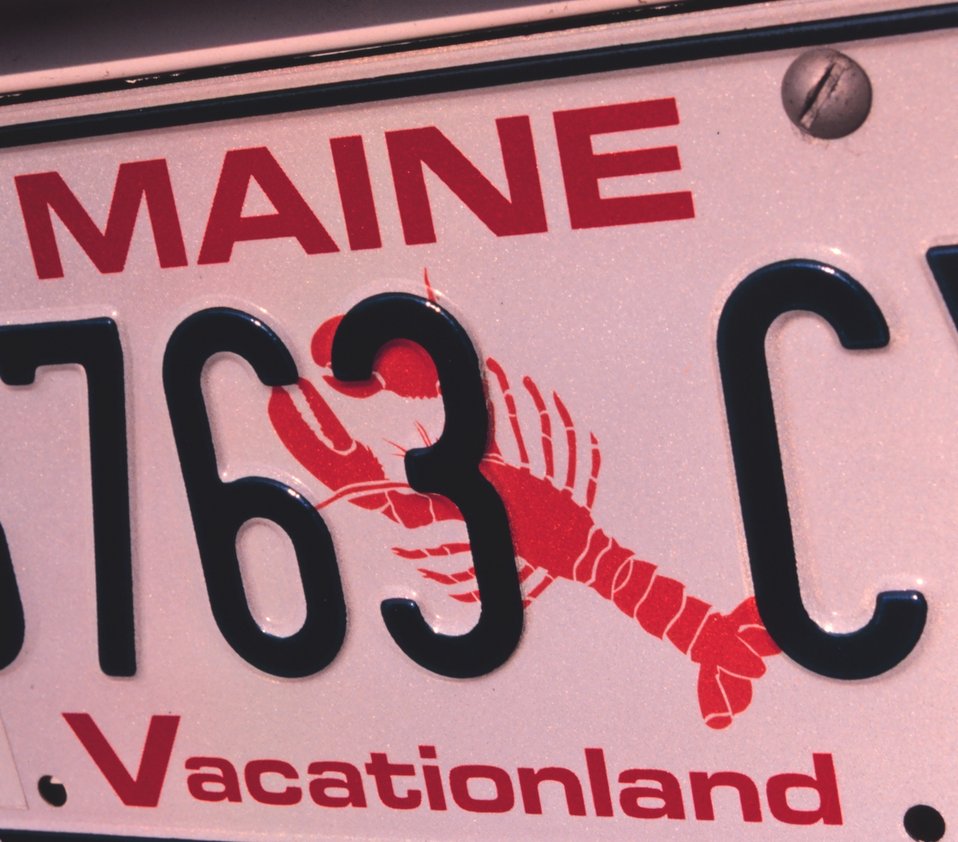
Maine celebrates its fishing and maritime heritage on its license plates